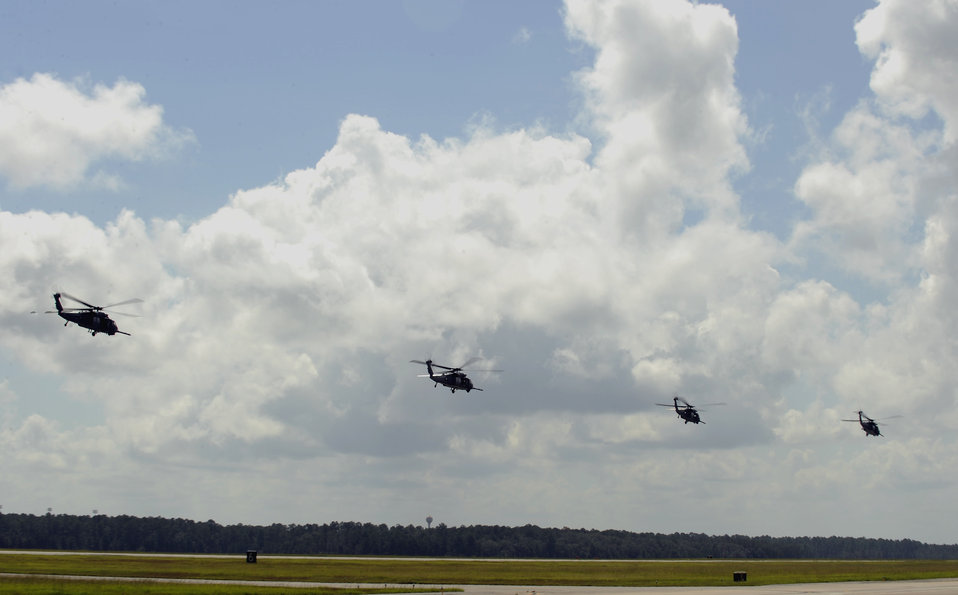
23rd Wing deploys

Four HH-60G Pave Hawk helicopters depart Moody Air Force Base, Ga., Sept. 12 for Gulfport, Miss. The helicopters and aircrews from the 41st Rescue Squadron will stage out of Gulfport and provide search and rescue support during Hurricane Ike.